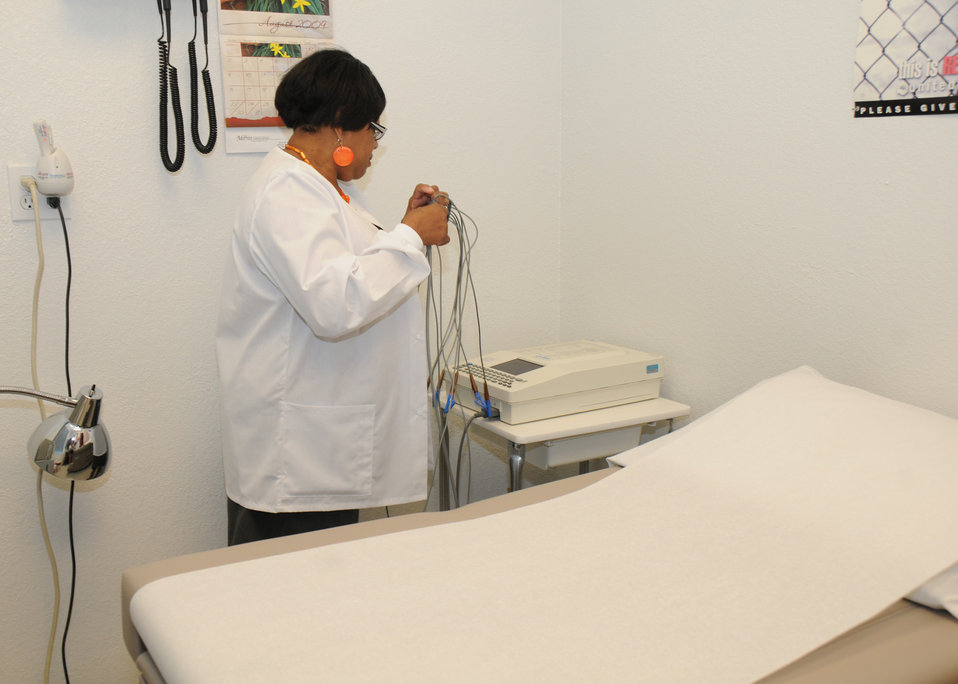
Beverly Hill-Wegley checks the echocardiogram machine at the Mary Mahoney Health Centerin Langston, OK. This clinic received CF Grant of $100,000.00 and a CF Direct Loan of $563,863.00 in ARRA funds to enlarge their facilities. They will add new examining rooms, a dental facility, and new equipment. This will expand medical services and provide low cost medical treatment to low income rural residents.